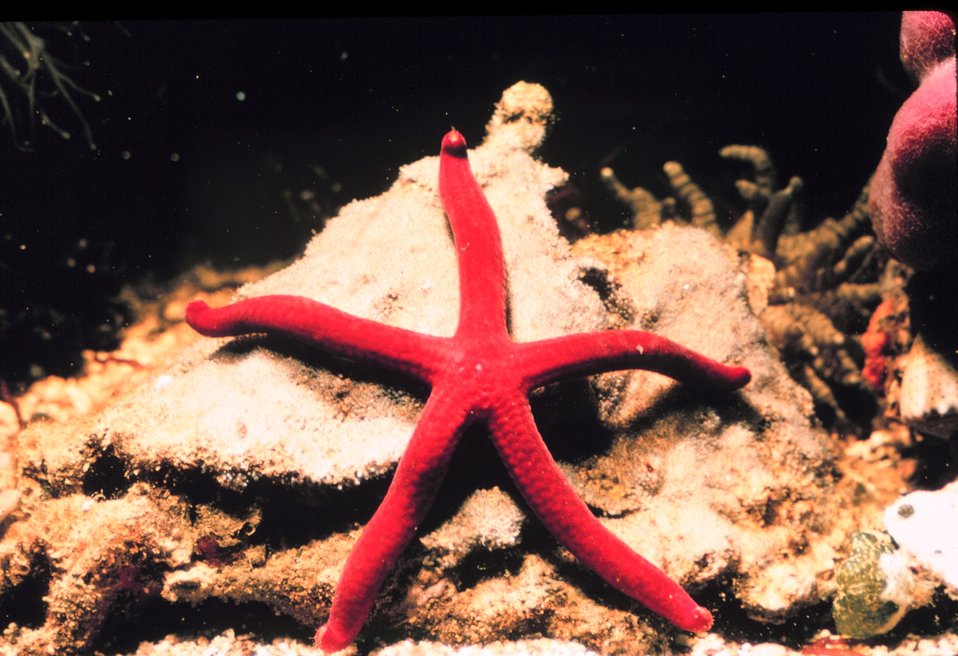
A bright red starfish.